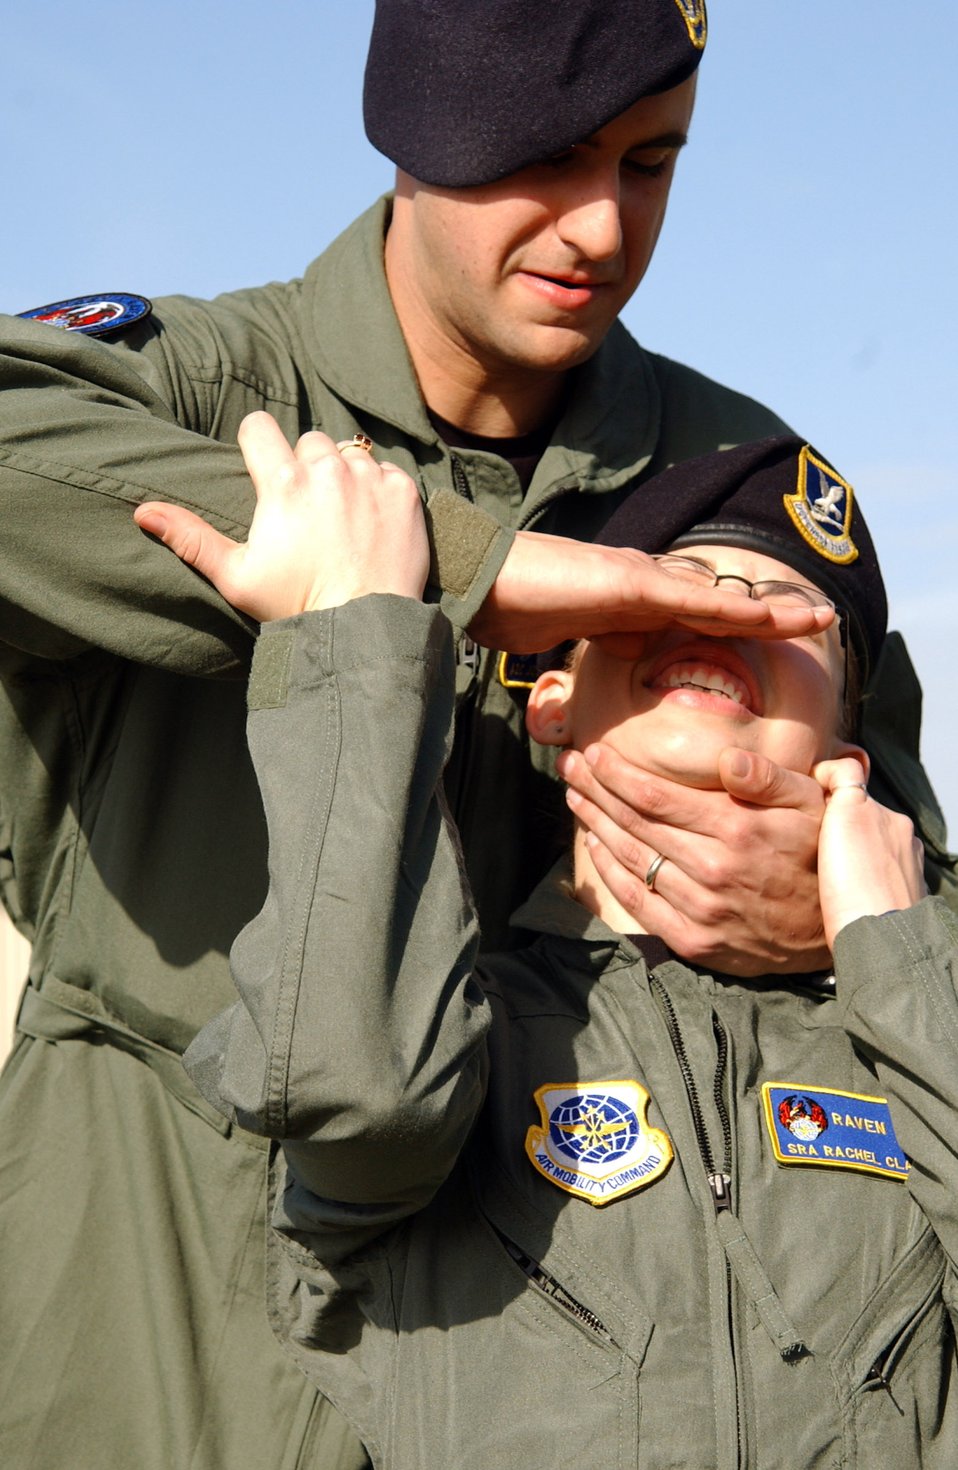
6 SFS PHOENIX RAVENS

MACDILL AIR FORCE BASE, Fla. (AFPN) -- Airman 1st Class Joseph Jones applies the infra-orbital pressure point to Senior Airman Rachel Claire Jan. 11. The Airmen are with the 6th Security Forces Squadron's Phoenix Ravens. Ravens are specially trained to detect, deter and counter threats with the least amount of force necessary.